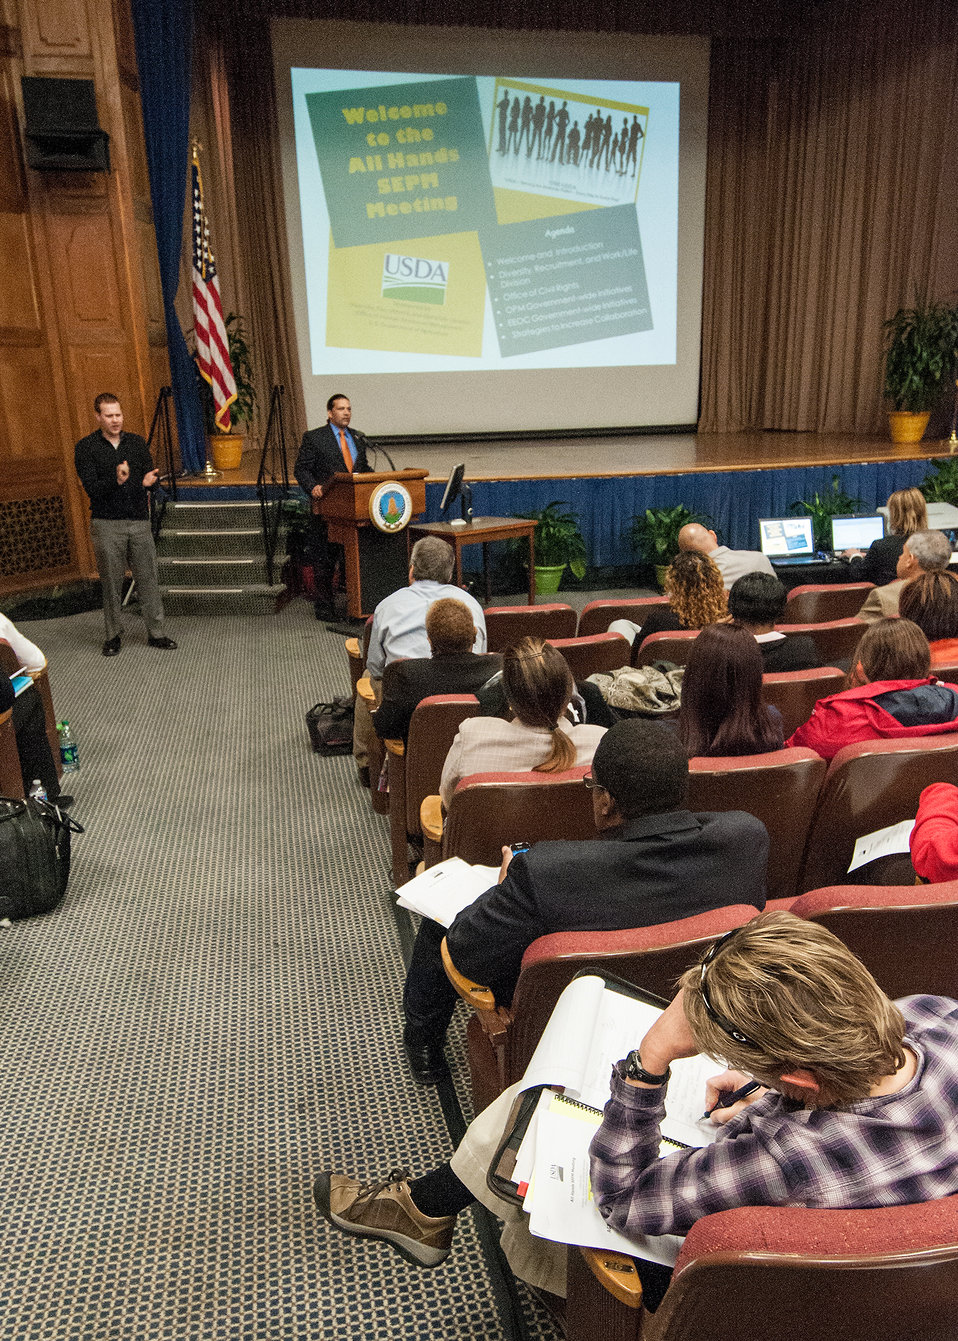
U.S. Department of Agriculture (USDA) Office of Human Resources Management (OHRM) Diversity Recruitment and Work/Life Division Director and Master of Ceremonies Monshi Ramdass introduces the speakers at the First Annual All Hands Special Emphasis Program Managers (SEPM) Meeting at the U.S. Department of Agriculture Jefferson Auditorium in Washington, D.C. on Wednesday, Mar. 13, 2013.